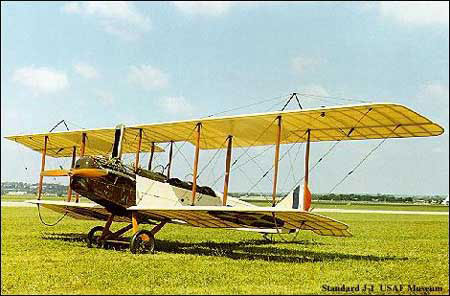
Standard J-1

The Standard J-1 is a two-seat primary trainer developed from the earlier Sloan and Standard H-series aircraft designed by Charles Healey Day. When the U.S. entered WW I, the Army ordered the aircraft (then known as the SJ) produced as a supplement to the Curtiss Jenny then in production. At about the same time, Standard introduced an advanced version of the SJ called the JR. The Army bought only six of the JR-series aircraft, but some of the JR's features were incorporated into SJ production aircraft; the resulting version became known as the J-1.